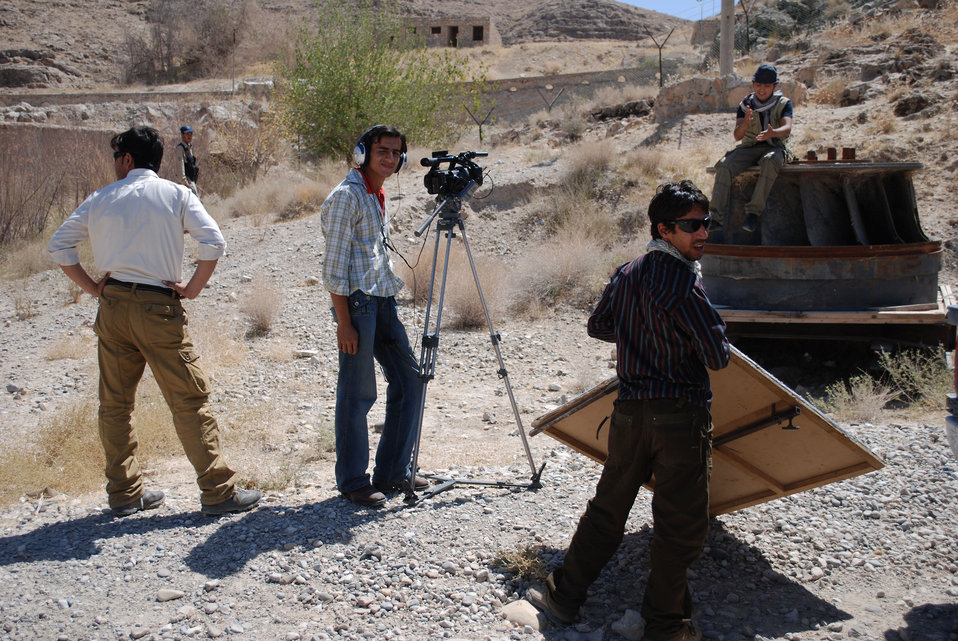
'On the Road' in Kandahar